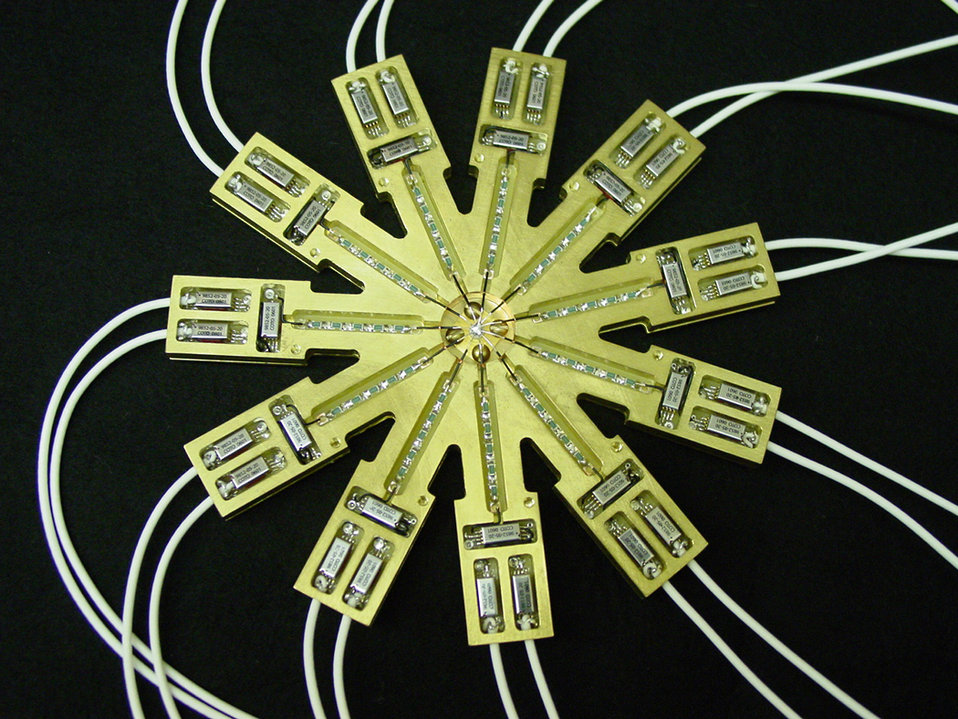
Voltage divider for the quantum watt